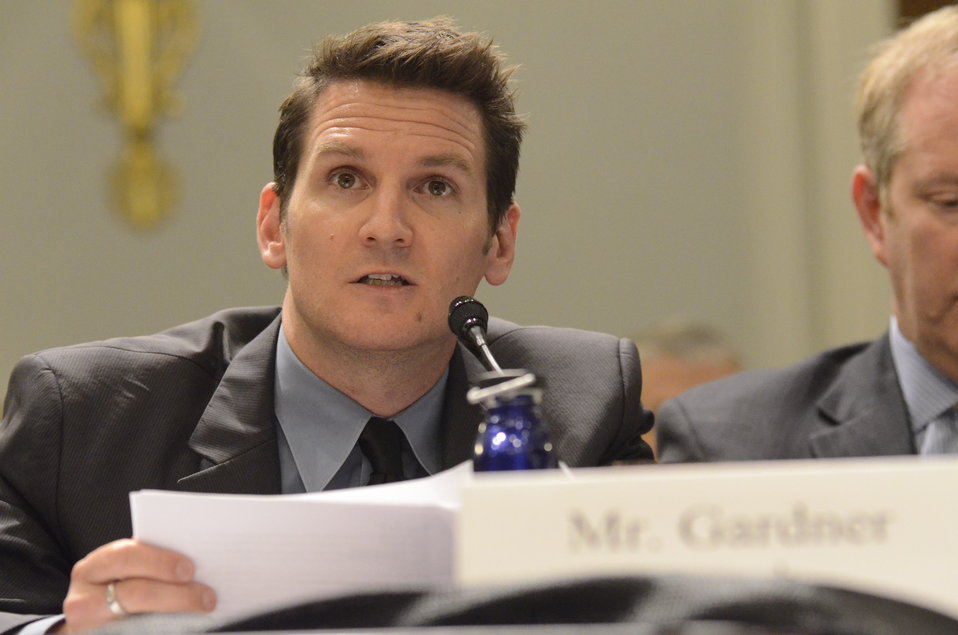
Director & Co-Founder, Reverb and Guster guitarist/singer Adam Gardner testifies on Retailers & Entertainers Lacey Implementation & Enforcement Fairness Act & Freedom from Over-Criminalization & Unjust Seizures Act at the Longworth House Office Building in Washington, D.C. on Tuesday, May 8, 2012.